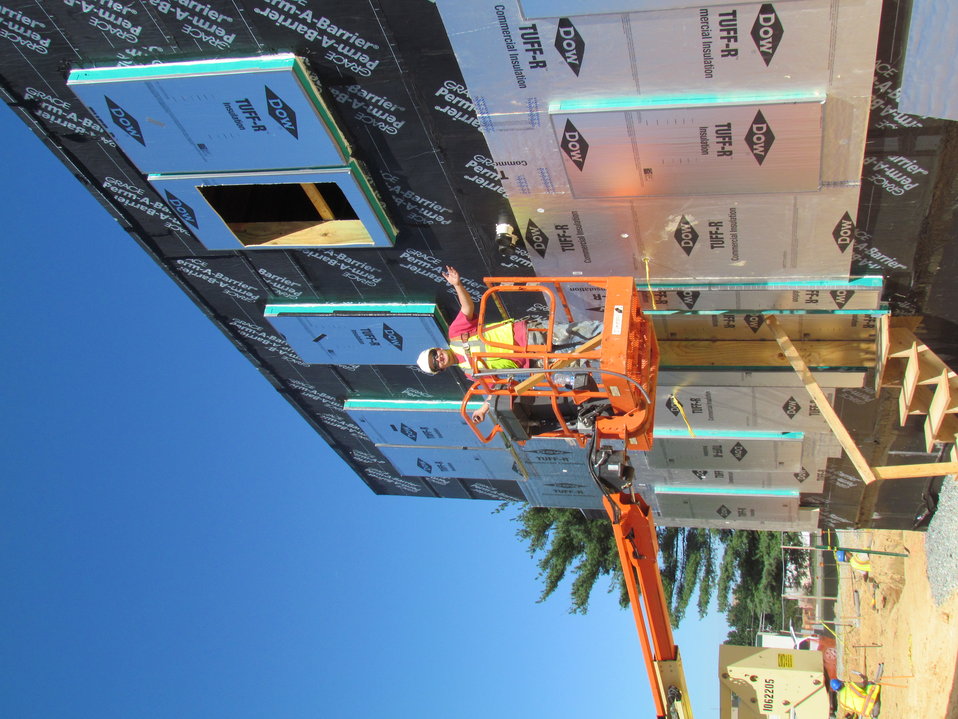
Net-Zero Energy Residential Test Facility - Photo showing partial insulation of south side of facility. The two layers of two inch exterior insulation, once applied, will make the exterior walls flush with the outermost portion of the window boxes (outlined in green).